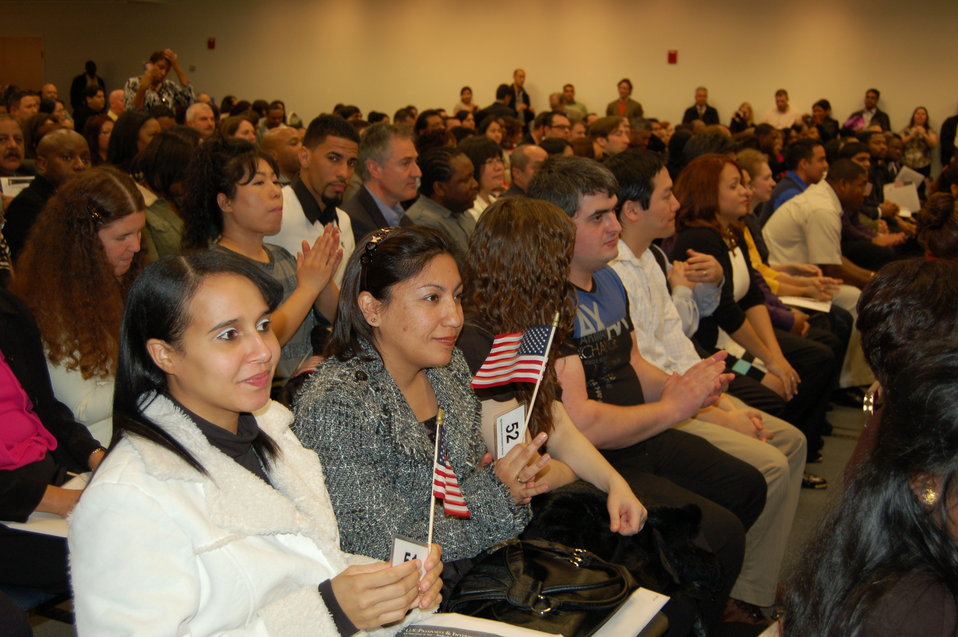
Naturalization Ceremony